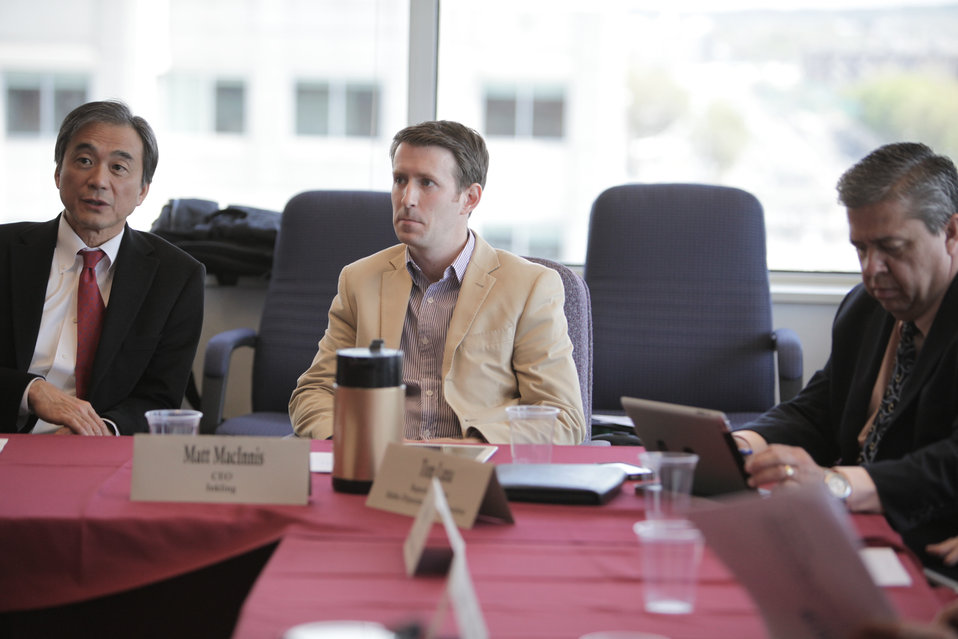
FCC Chairman Host Leaders From the Digital Education Ecosystem

President and CEO of Aruba Networks, Dominic Orr and CEO of Inkling, Matt MacInnis at the FCC Chairman's event at FCC's HQ in Washington, DC on March 29, 2012.